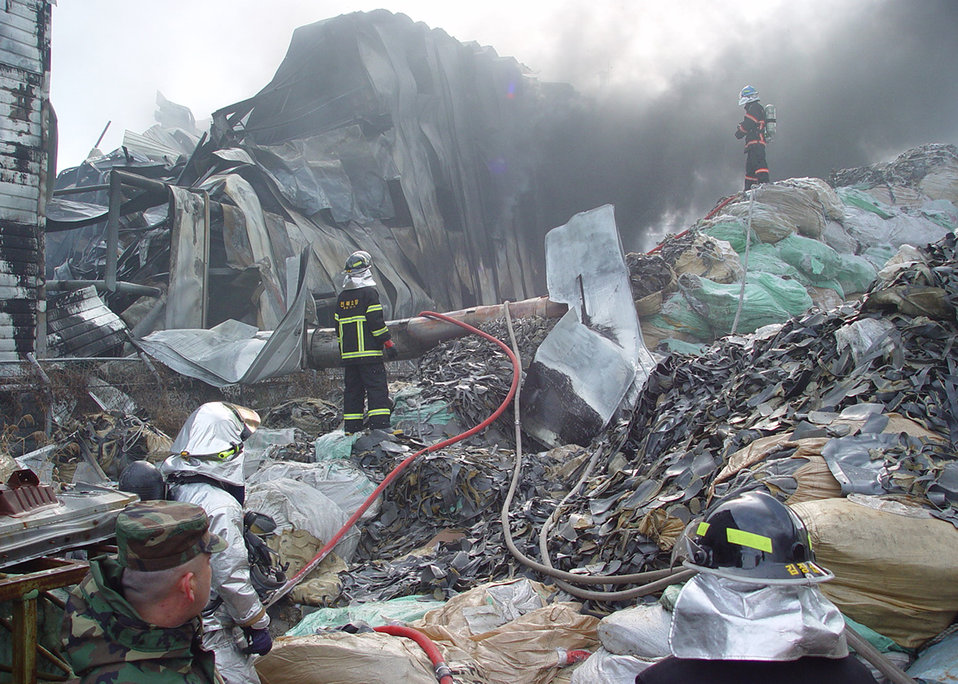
Kunsan firefighters assist local fire department

Gunsan City firefighters and 8th Civil Engineer Squadron firefighters diminished a fire here Dec. 3. Airmen from the 8th CES fire department, work together with local fire departments to put out a large industrial fire.